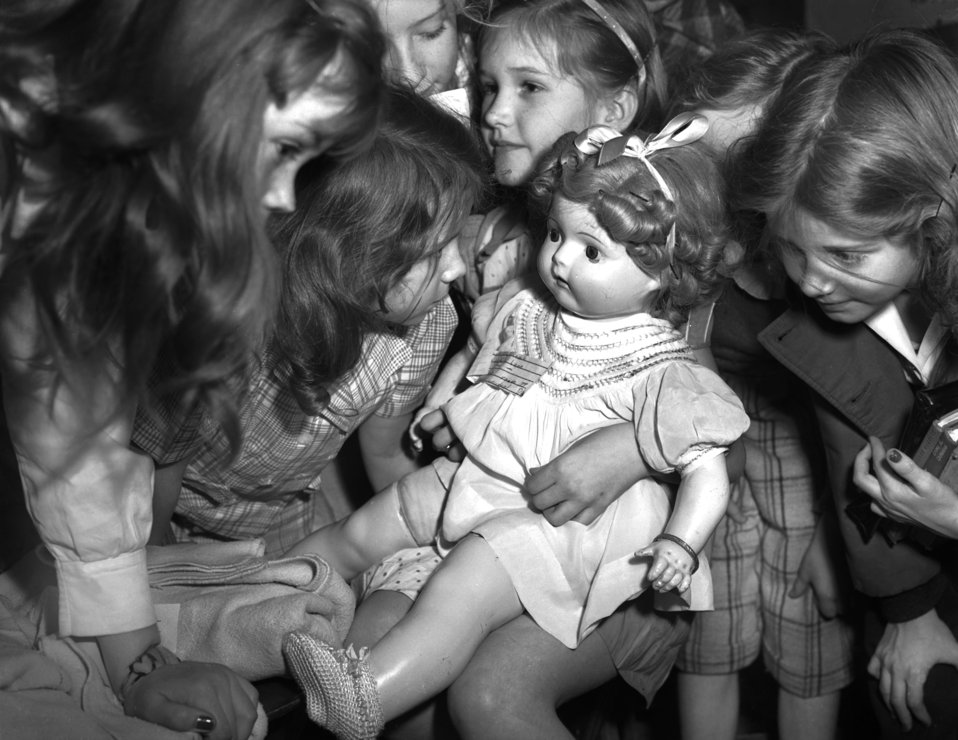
Doll Show Highland View School Oak Ridge

3235-4 DOE photo by Ed Westcott 1-10-1947 Oak Ridge Tennessee